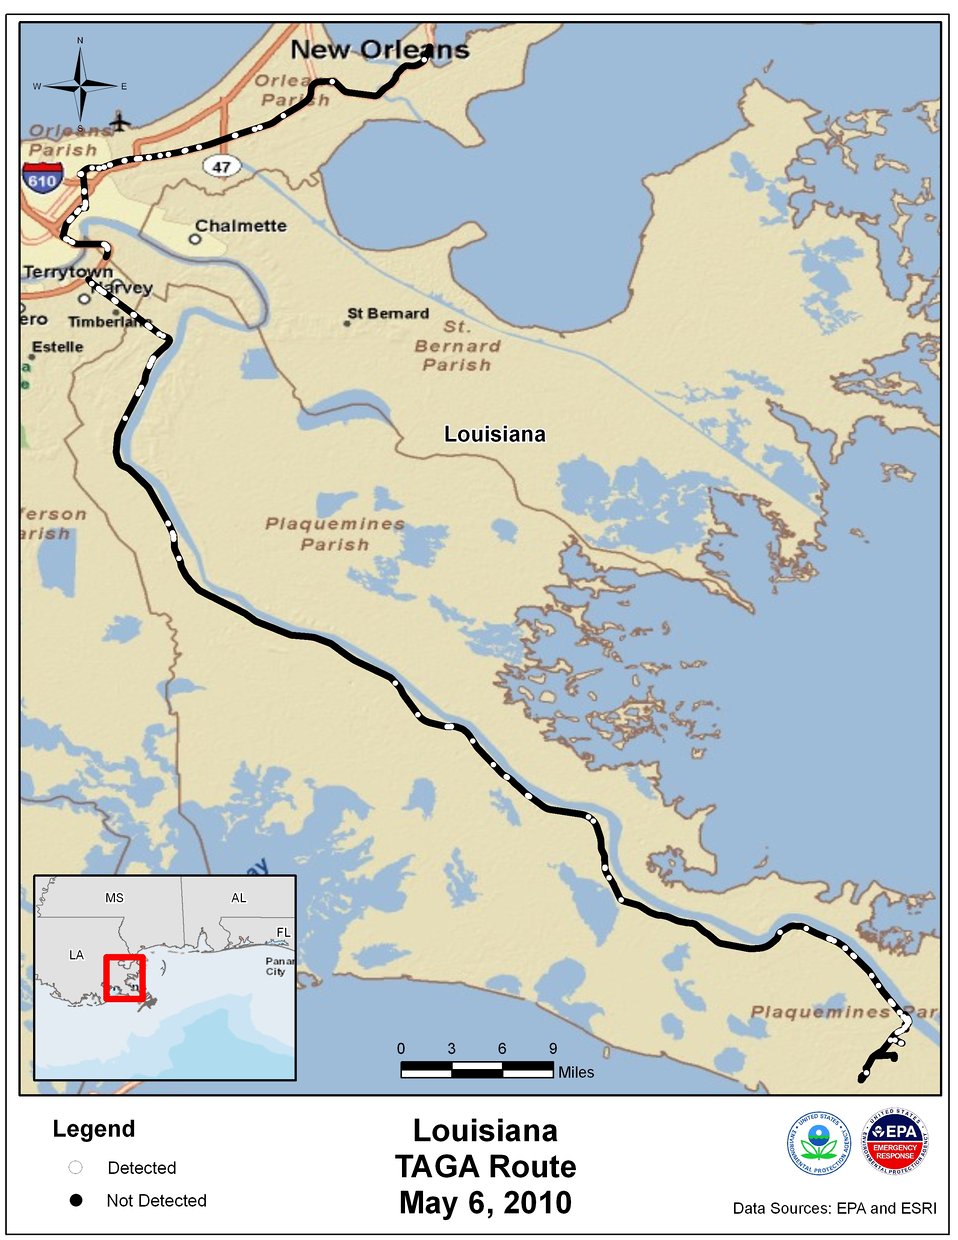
EPA TAGA Air Monitoring Locations May 6, 2010